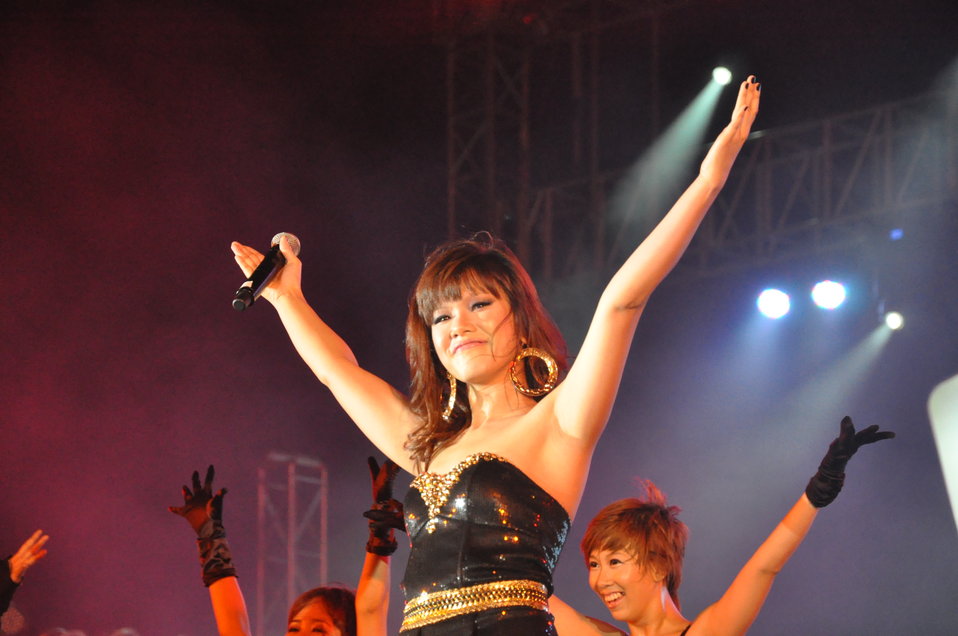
USAID MTV EXIT HCMC Concert

Concert in Ho Chi Minh City against human trafficking, April 17, 2010